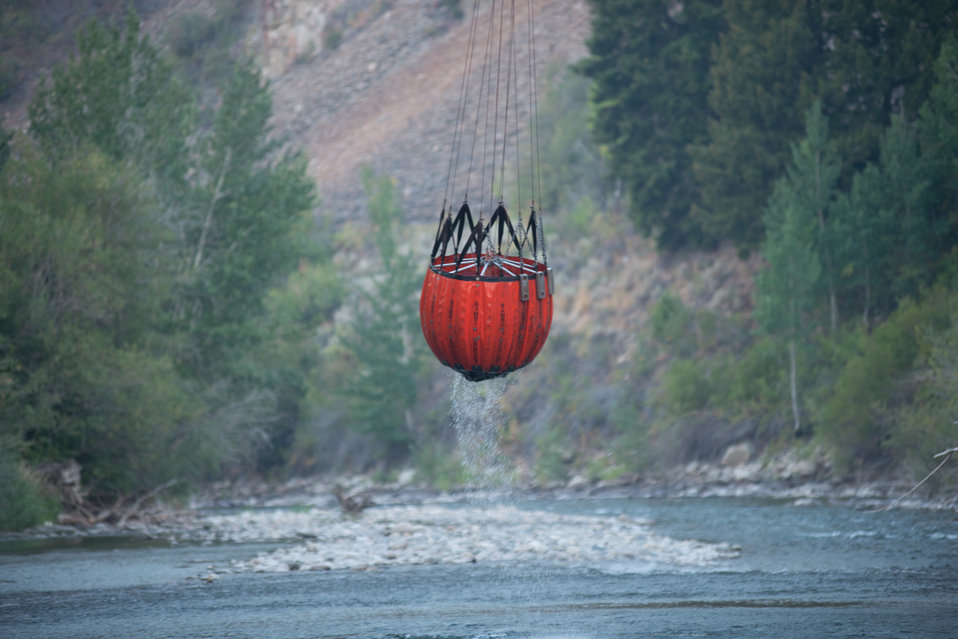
A Bell UH-1H helicopter lifts a full Bambi Bucket, a collapsible bucket utilizing a pilot-controlled release valve, that is able to deliver a concentrated column of water from the helicopter to the fire on the Carbonate Ridge, rising behind the Wood River, during Beaver Creek Fire, west of Hailey, ID, on Monday, Aug 19, 2013.